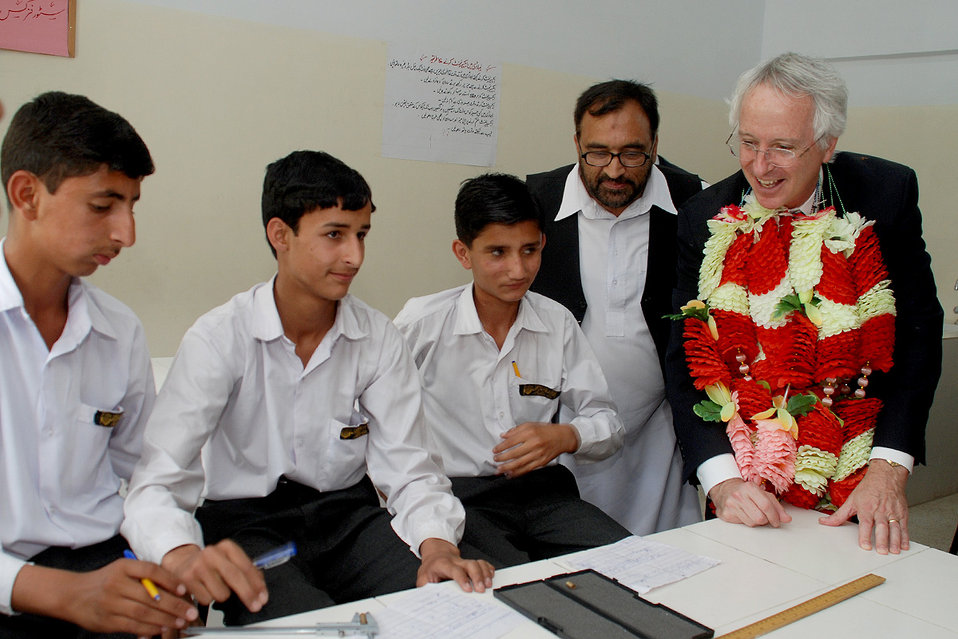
Envoy Highlights U.S. Development

In addition to the major structural considerations in design, the buildings have been designed to protect life.